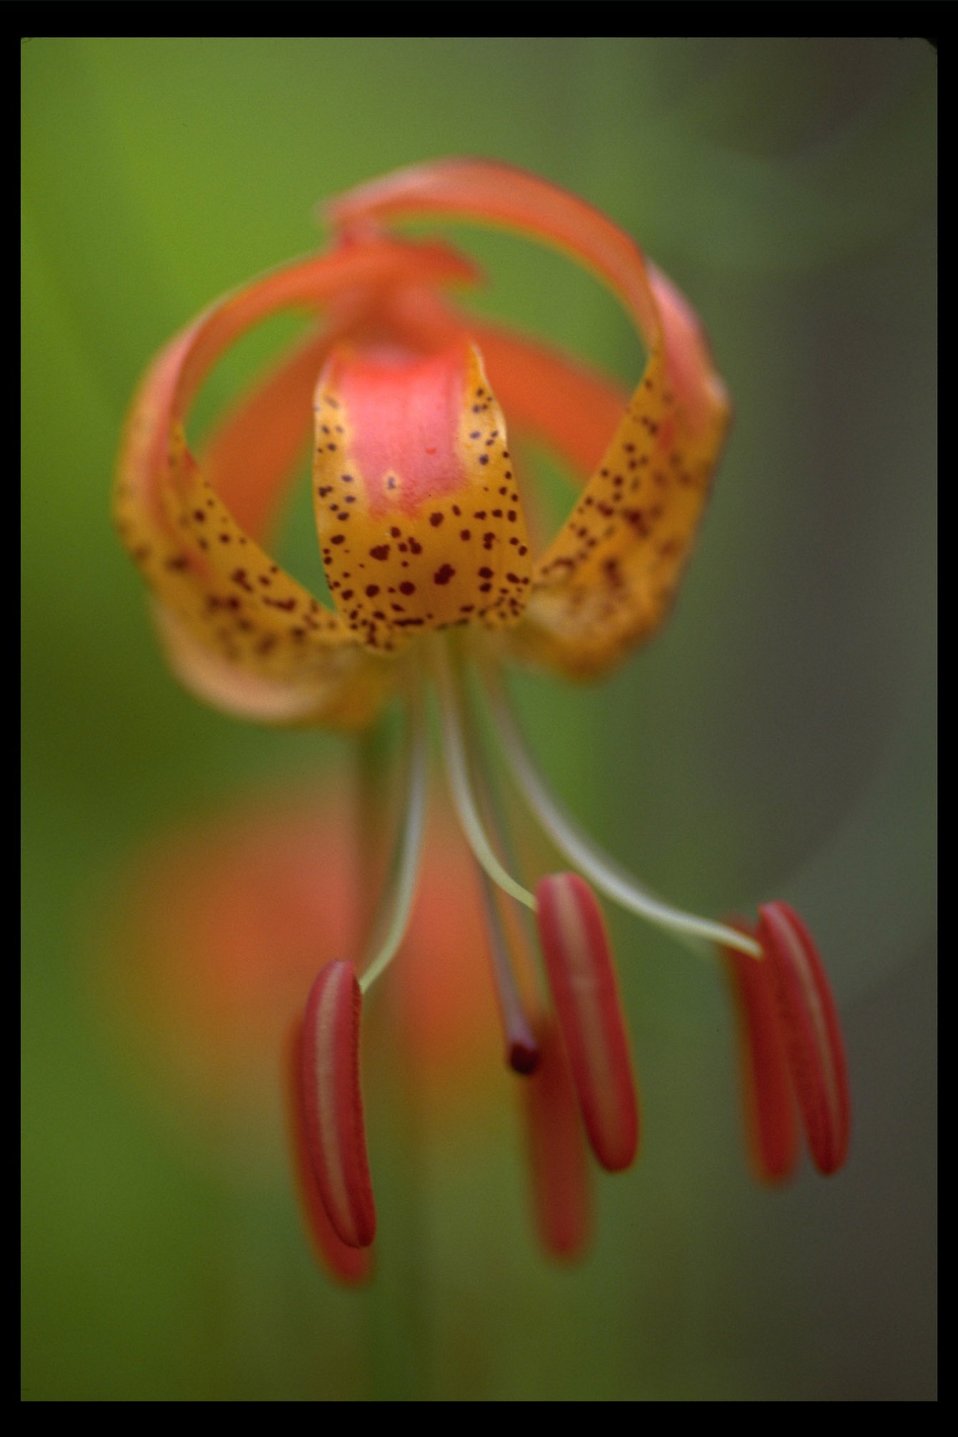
Volmer's Lily along Upper Trail Creek.